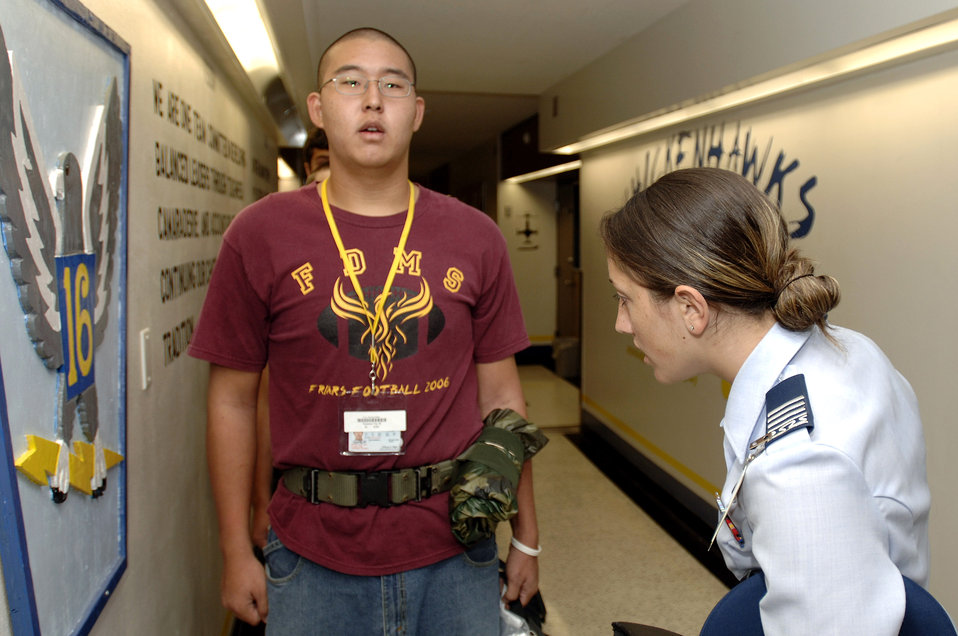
Welcome to the Air Force

Basic Cadet Trainee Suong Hun Lee is inspected by Cadet 1st Class Katie Newkirk June 28 at the U.S. Air Force Academy in Colorado. The 1,304 members arrived June 28 to begin basic cadet training. Cadet Newkirk is the cadet squadron 31 commander.